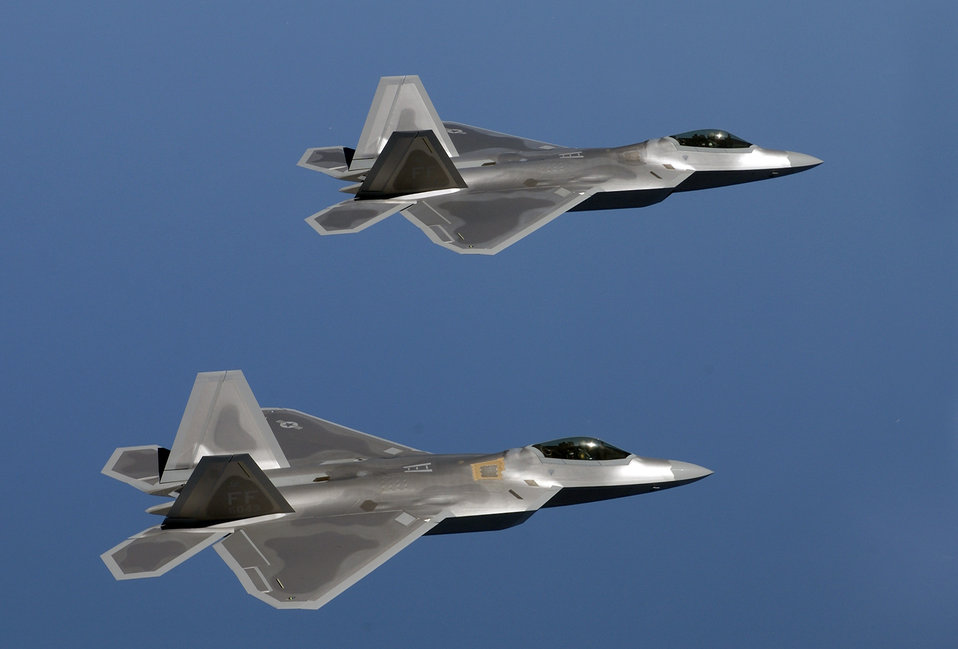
Raptors to bring air superiority to Northern Edge 2006

F-22A Raptors fly over Langley Air Force Base, Va., on Aug. 12, 2005.